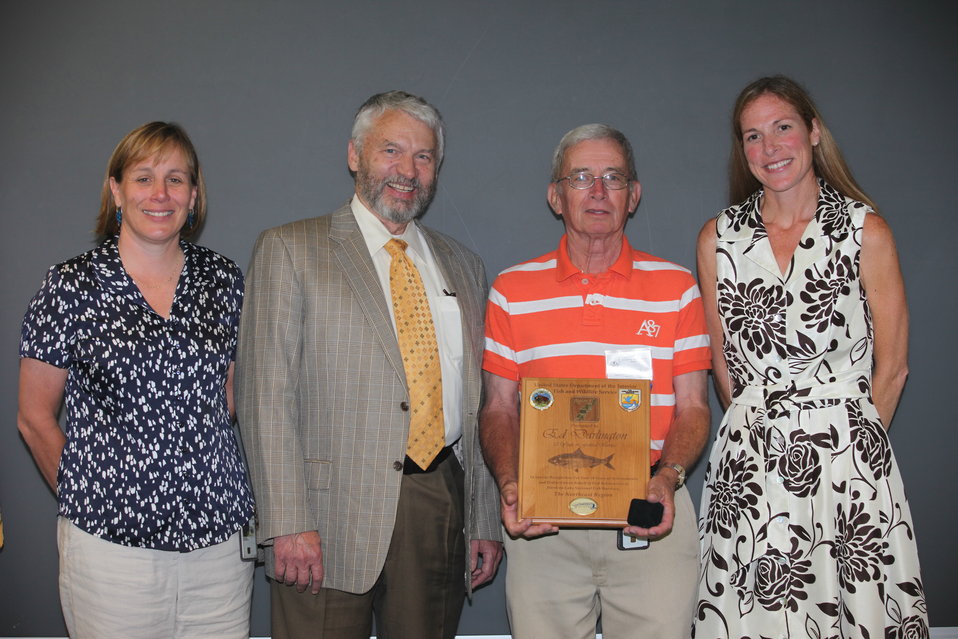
Ed Darlington recieved a special recognition award for 50 years of Service.
From left to right: Deputy Regional Director Deb Rocque, Deputy Director Rowan Gould, Ed Darlington and Regional Director Wendi Weber